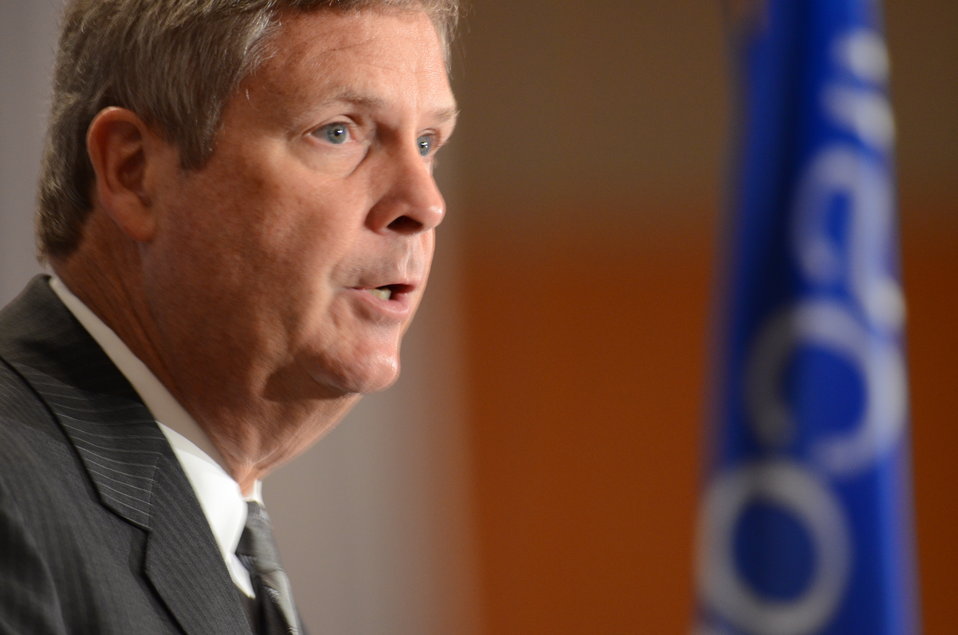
Agriculture Secretary Tom Vilsack speaks at the International Association for Food Protection (IAPP) 100th annual meeting in Milwaukee, WI, on Wednesday, August 3, 2011. IAPP is committed to providing members worldwide with a forum to exchange information on protecting the global food supply.